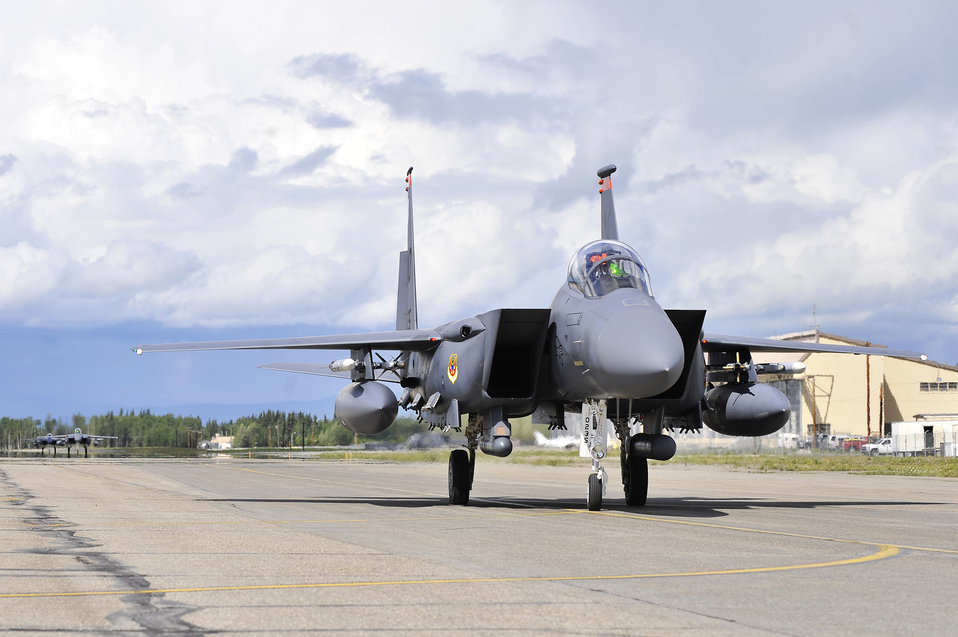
The Eagle has landed

An F-15E Strike Eagle taxis June 13, 2011, at Eielson Air Force Base, Alaska, after completing the first sortie of the NORTHERN EDGE 2011 exercise.